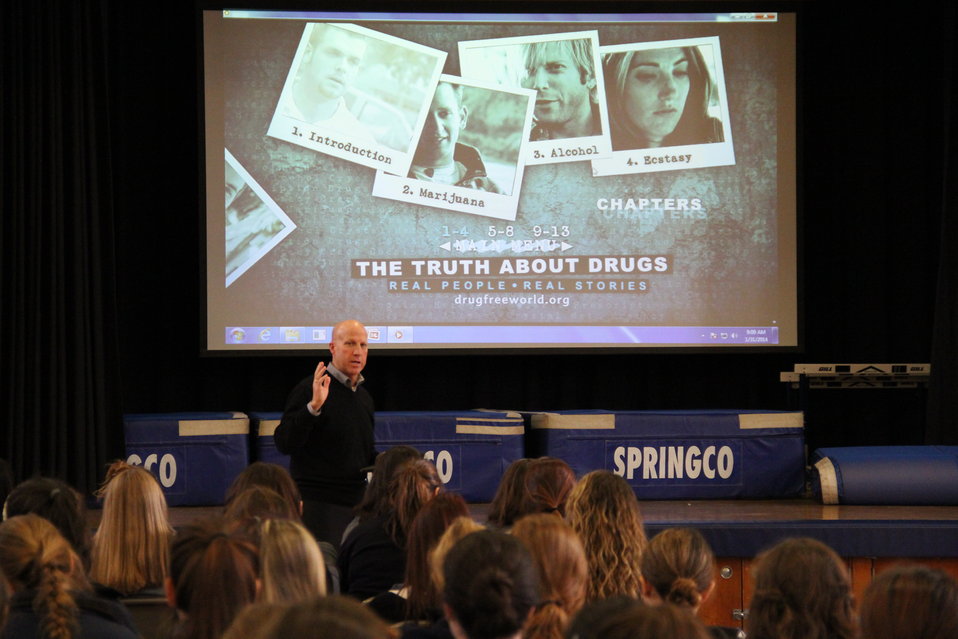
Getting the Answers